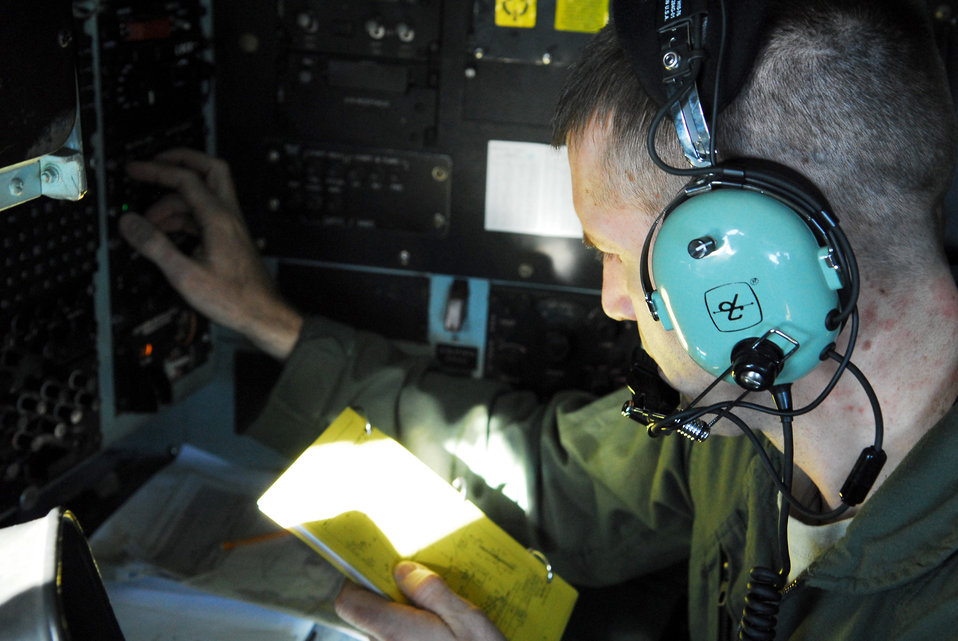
Delivering relief supplies

1st Lt. Jon Parks reviews a flight manual during a mission March 29, 2011, above Japan. Parks is a C-130 Hercules navigator assigned to the 36th Airlift Squadron at Yokota Air Base, Japan.